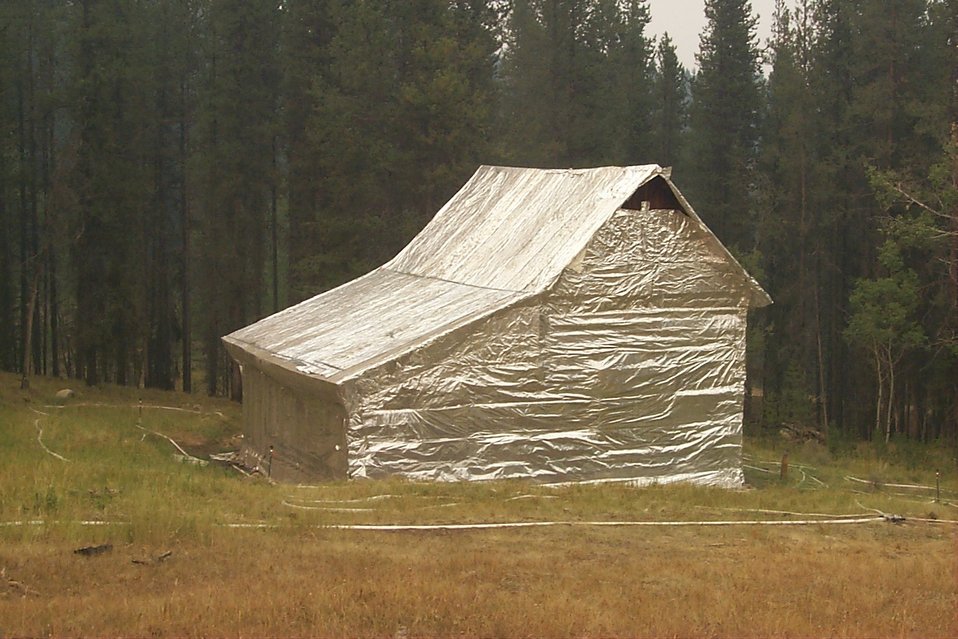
Fire retardant measures Fire Clearwater Fire Salmon Field Office USRD Upper Snake River District